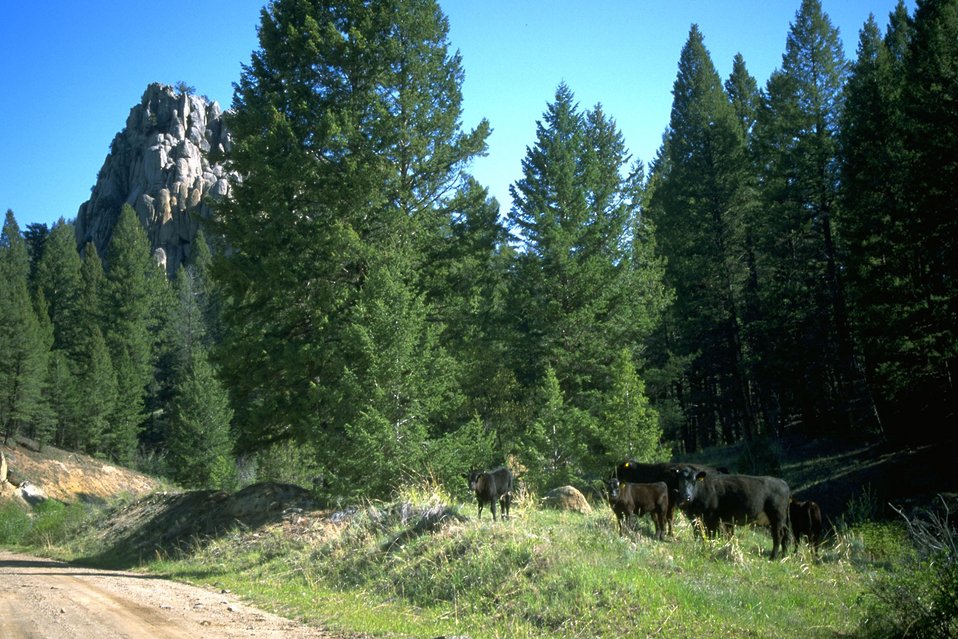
Cows grazing in the Humbug Spires Wilderness Study Area